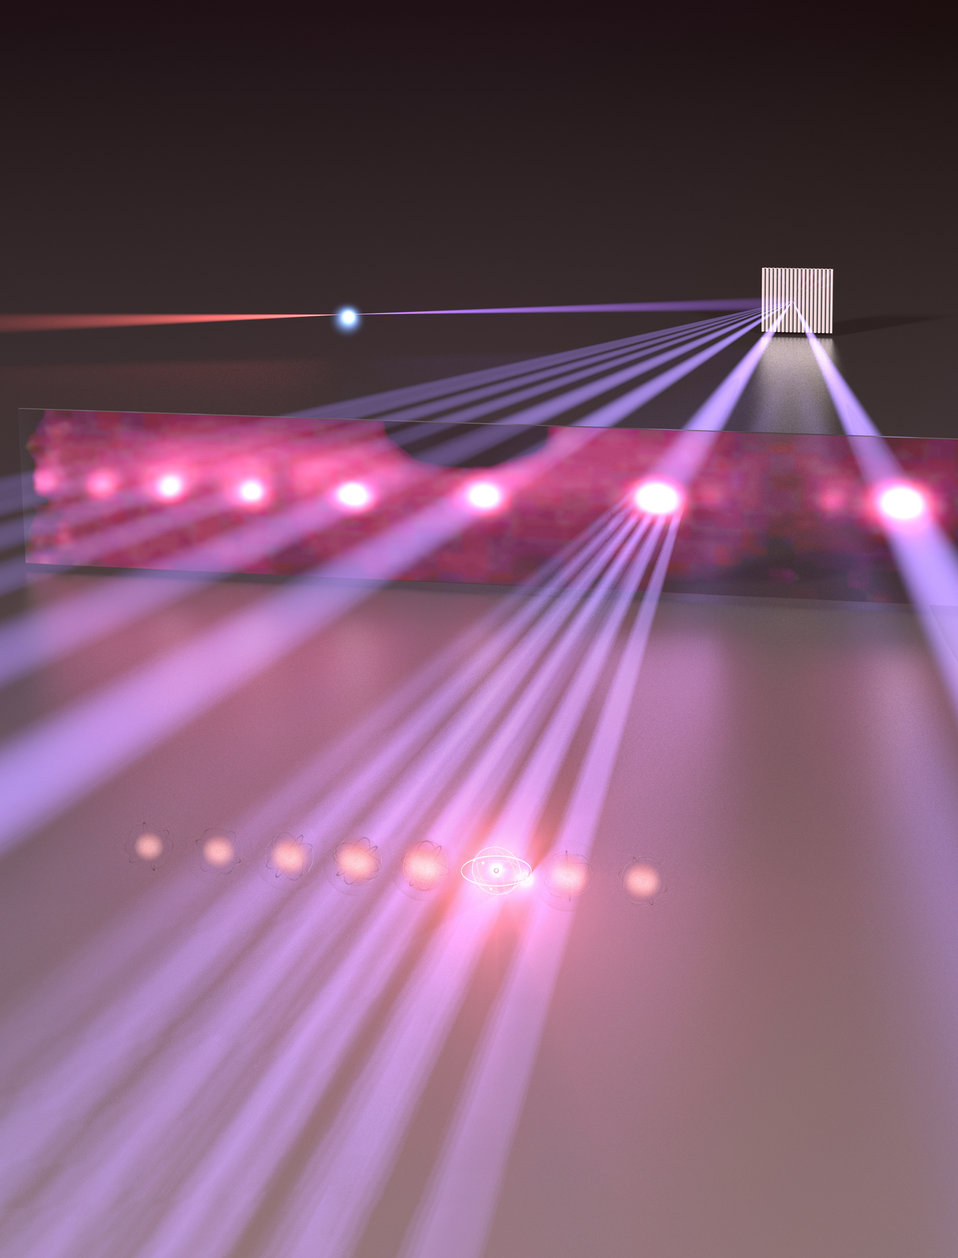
Extreme ultraviolet (EUV) frequency comb

Artist's conception of JILA's extreme ultraviolet (EUV) frequency comb. The original light source is a pulsed infrared laser, which is used to create a train of attosecond-long pulse bursts at EUV wavelengths (the bright white spot in the distance). Each of the resulting 'harmonics'--strong signals at regular fractions of the original infrared wavelength--has its own set of 'teeth' marking individual frequencies (series of adjacent white lines in the foreground), creating a frequency comb within each harmonic. To prove the new structure exists, JILA scientists observed a tooth interacting with argon atoms, indicated by the glowing atom symbol in the center foreground.